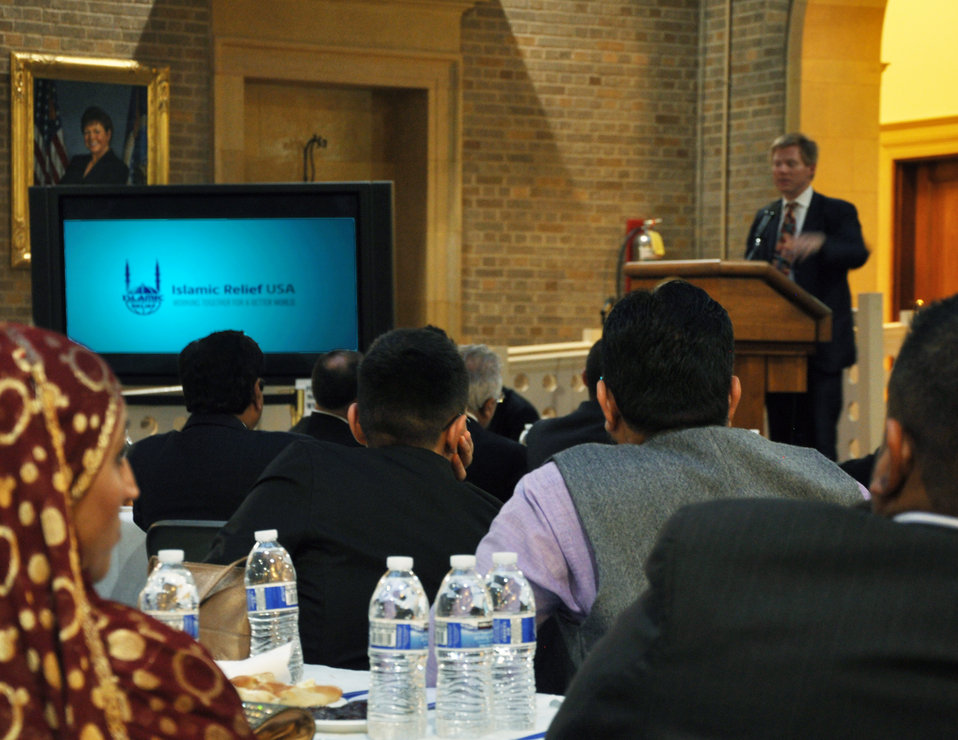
U.S. Department of Agriculture (USDA) StrikeForce Initiative Director Max Finberg emcees the USDA's fifth annual Ramadan dinner on the USDA Whitten Building patio on Thursday, Aug. 1, 2013. For the second year in a row, Islamic Relief USA had the privilege of sponsoring the event’s dinner. Islamic Relief USA works with the USDA as well as numerous other organizations to help alleviate hunger. In one joint initiative with the USDA, IRUSA helps support community organizations across America that provide summer meals to low-income youth who rely on free or reduced-cost school lunches during the school year.